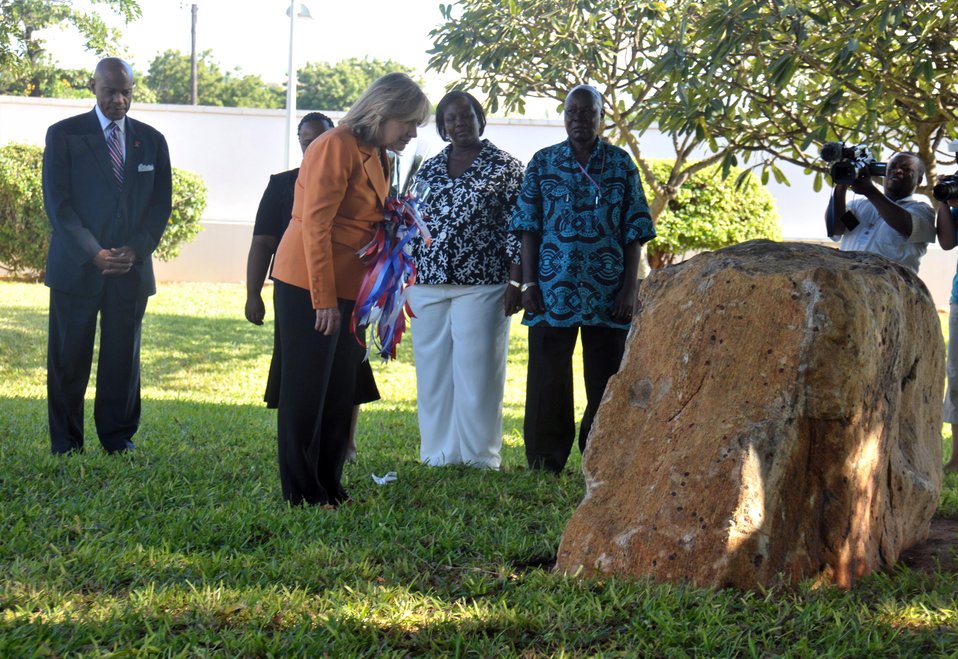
Secretary Clinton Lays Flowers at the Memorials of the 1998 Bombings

U.S. Secretary of State Hillary Rodham Clinton lays flowers at the memorial to the 1998 Bombing of the Embassy, at the U.S. Embassy in Dar es Salaam, Tanzania, on June 12, 2011.